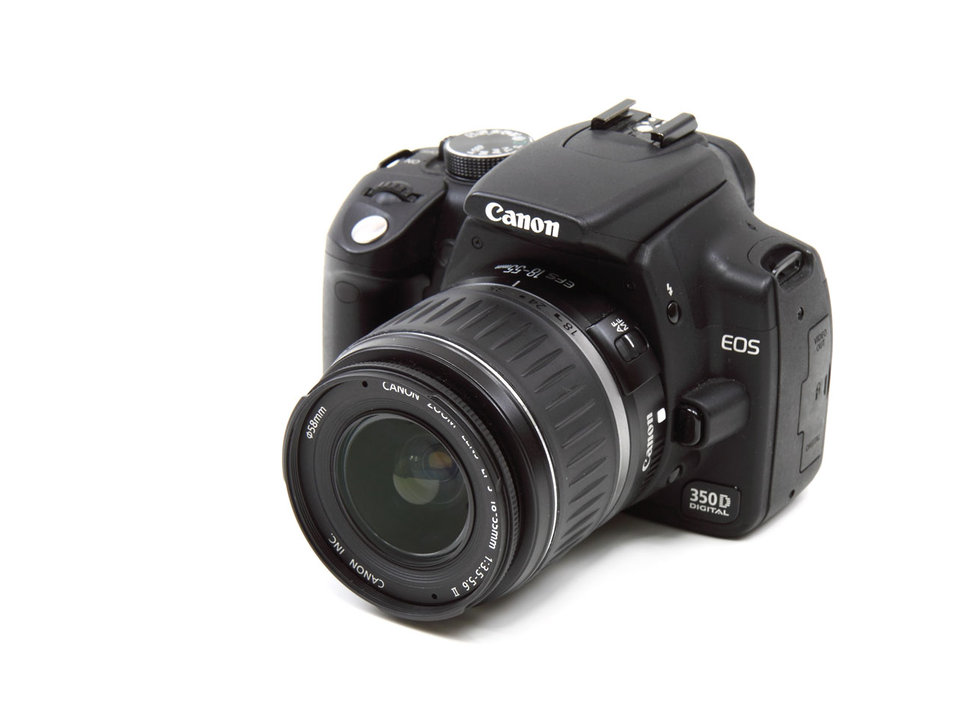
Digital slr

My older camera - canon 350d.